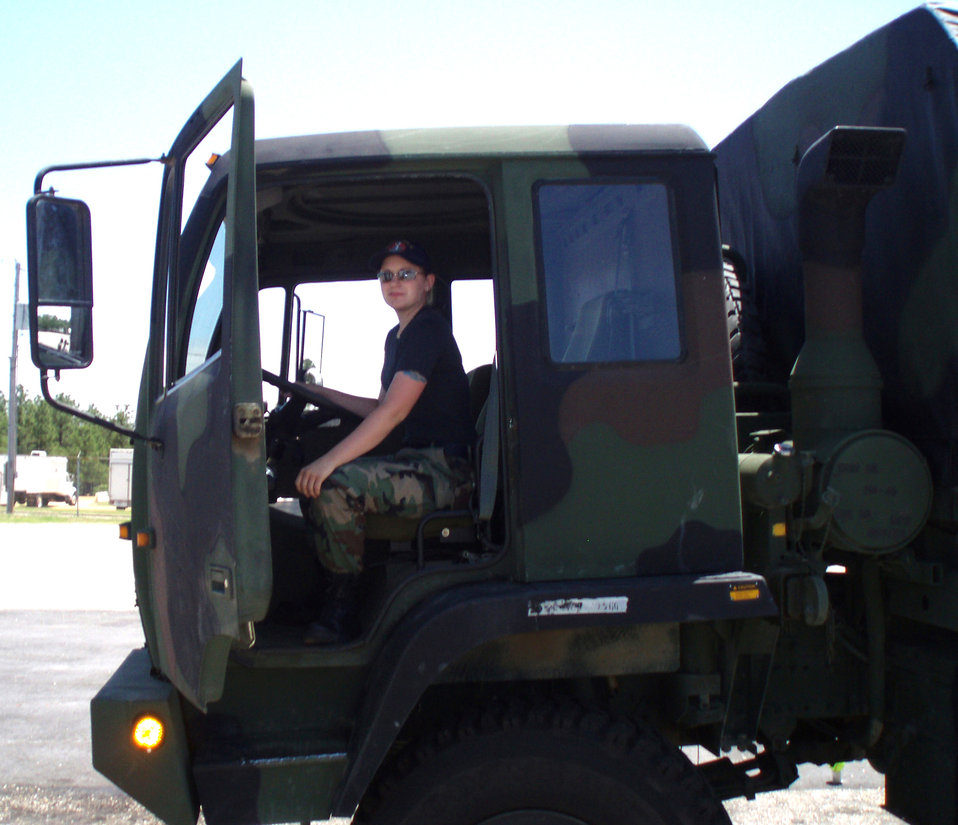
Pope Airman Killed in Afghanistan

Senior Airman Ashton Goodman was killed in action in Afghanistan May 26. Airman Goodman was assigned to 43rd Logistics Readiness Squadron at Pope Air Force Base, N.C.